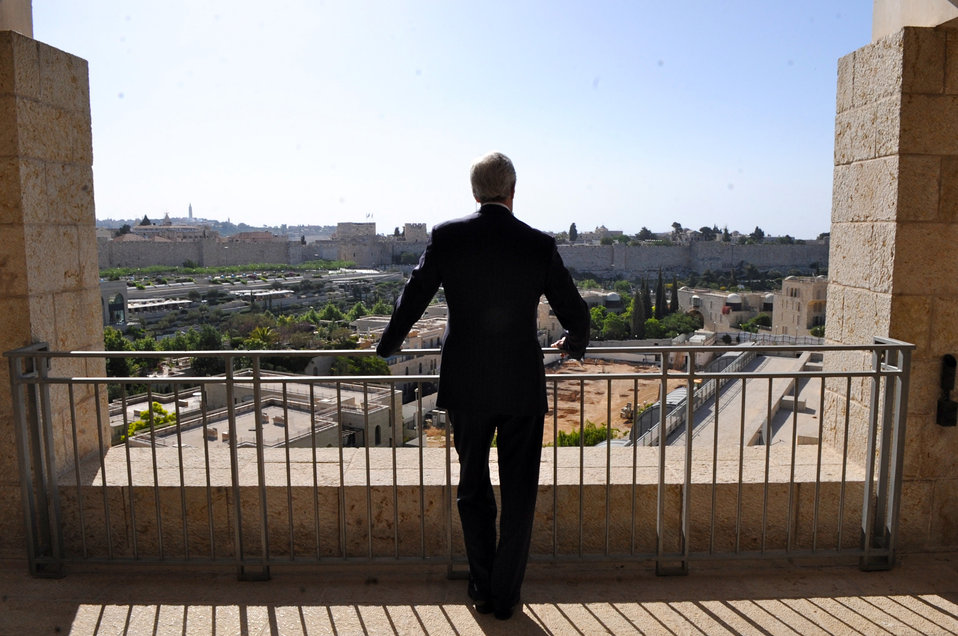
Secretary Kerry Looks Out at the Old City in Jerusalem

U.S. Secretary of State John Kerry looks out at the Old City in Jerusalem before a meeting with Israeli Prime Minister Benjamin Netanyahu on May 24, 2013.